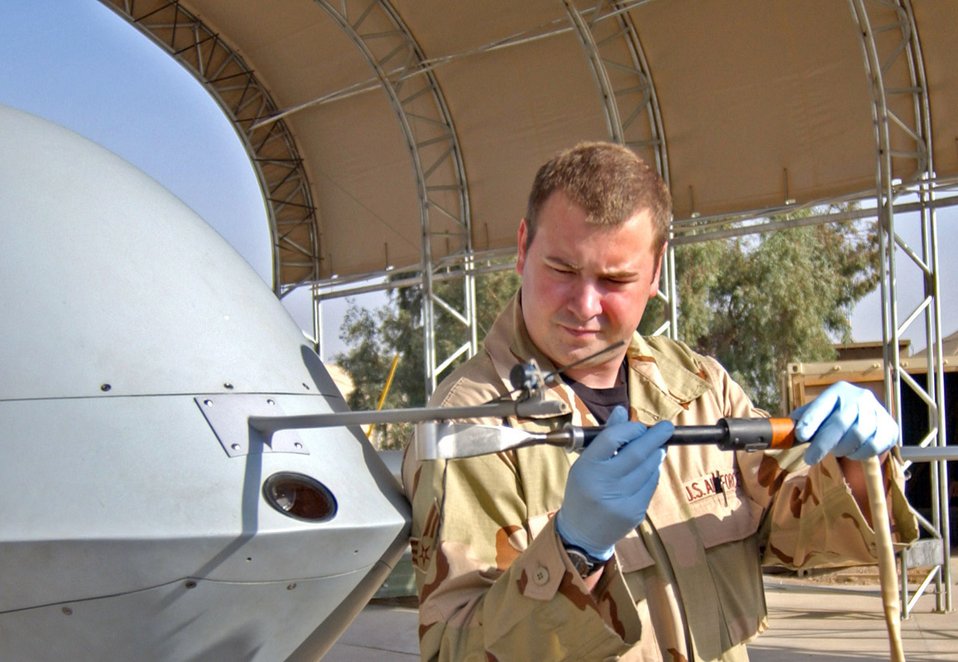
Prowling Predators

BALAD AIR BASE, Iraq (AFPN) -- Senior Airman Neal Eastwood uses a heating tool to secure a yaw string on an MQ-1 Predator. The pilot uses the yaw string to determine wind direction. The Airman is with the 46th Aircraft Maintenance Unit and deployed from Creech Air Force Base, Nev.